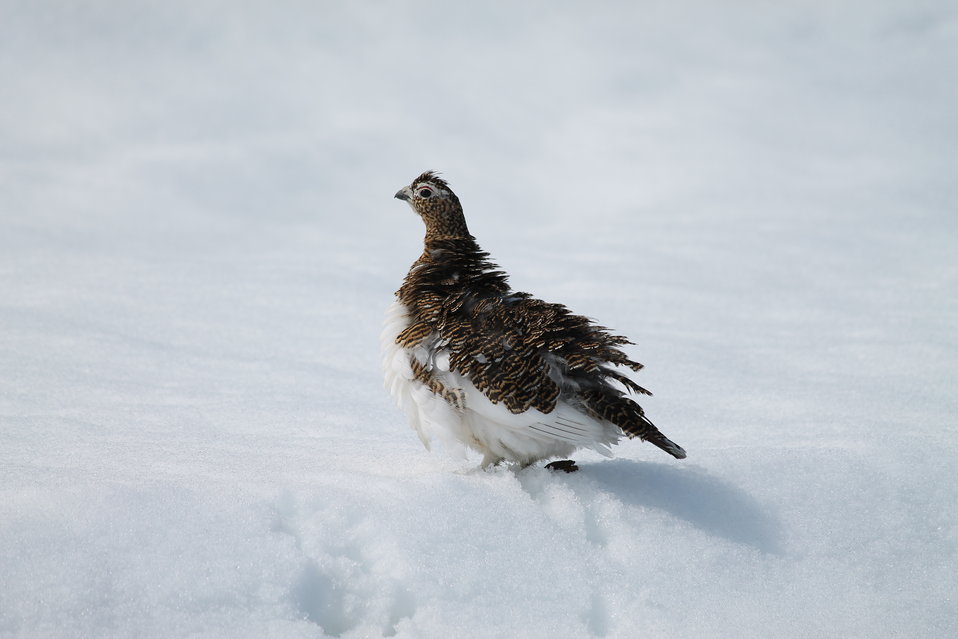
Ptarmigan fluffing feathers

This female was strutting her stuff while the male ptarmigan fought over her affections.

USFWS Yukon Delta NWR